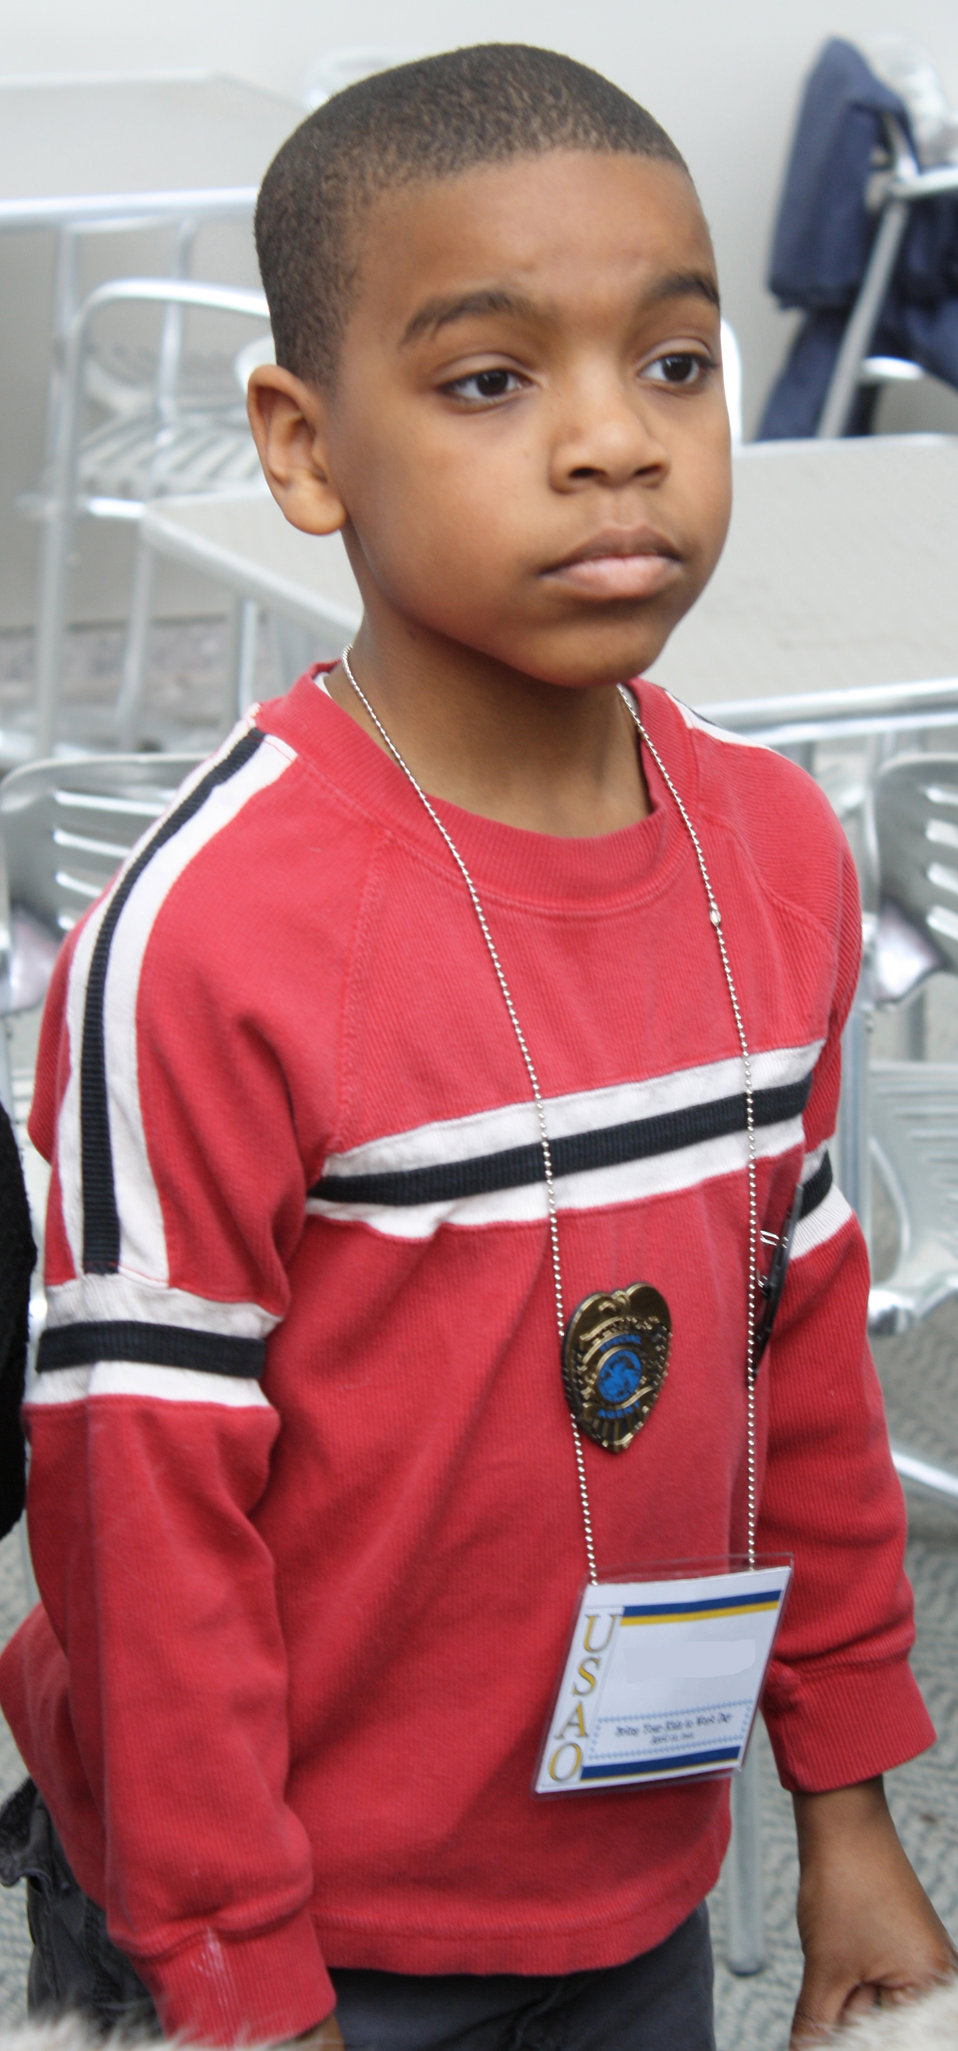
Future Special Agent?